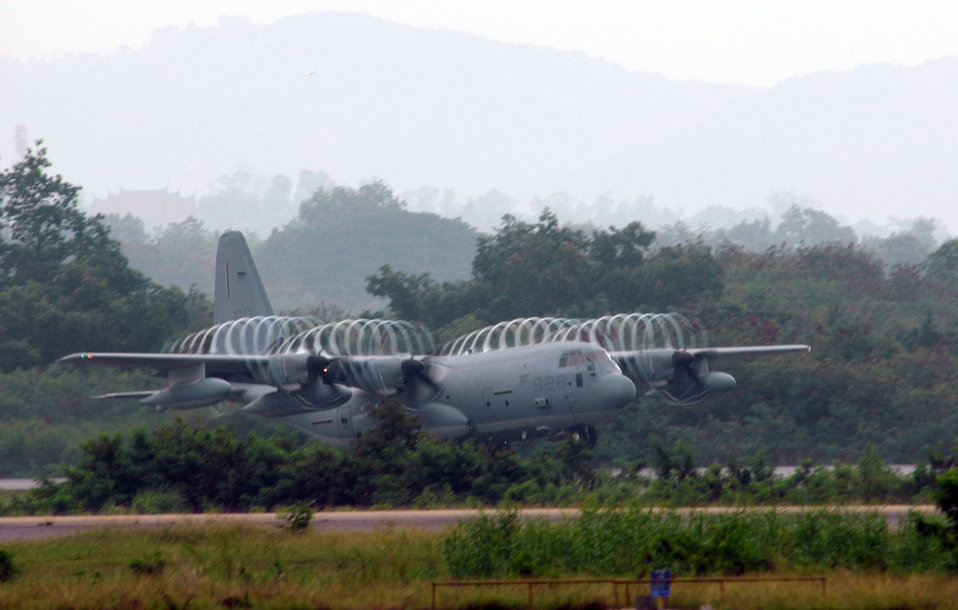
Yokota operations commander discusses importance of worldwide mobility presence

A C-130 Hercules leaves UTAPAO-International Airport, Thailand, in an effort to supply aid to the people of Myanmar on May 15, 2009. The C-130 is from the 515th Air Mobility Operations Group, Yokota Air Base, Japan.